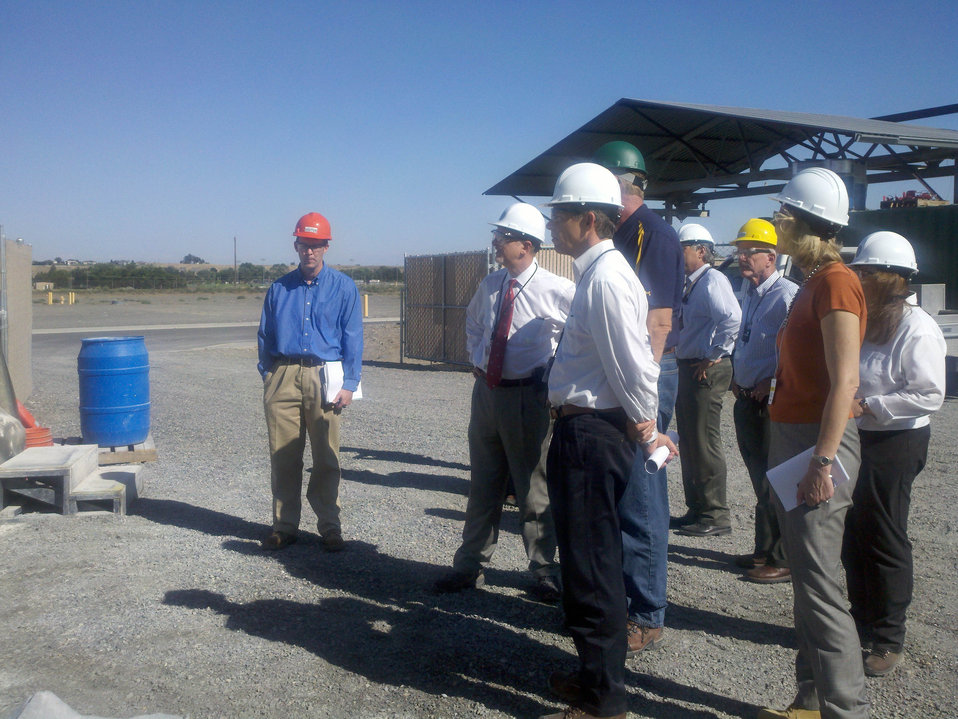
Acting Assistant Secretary at MARS testing platform

The Acting Assistant Secretary David Huizenga tours the Mobile Arm Retrieval System (MARS) testing platform at Hanford.